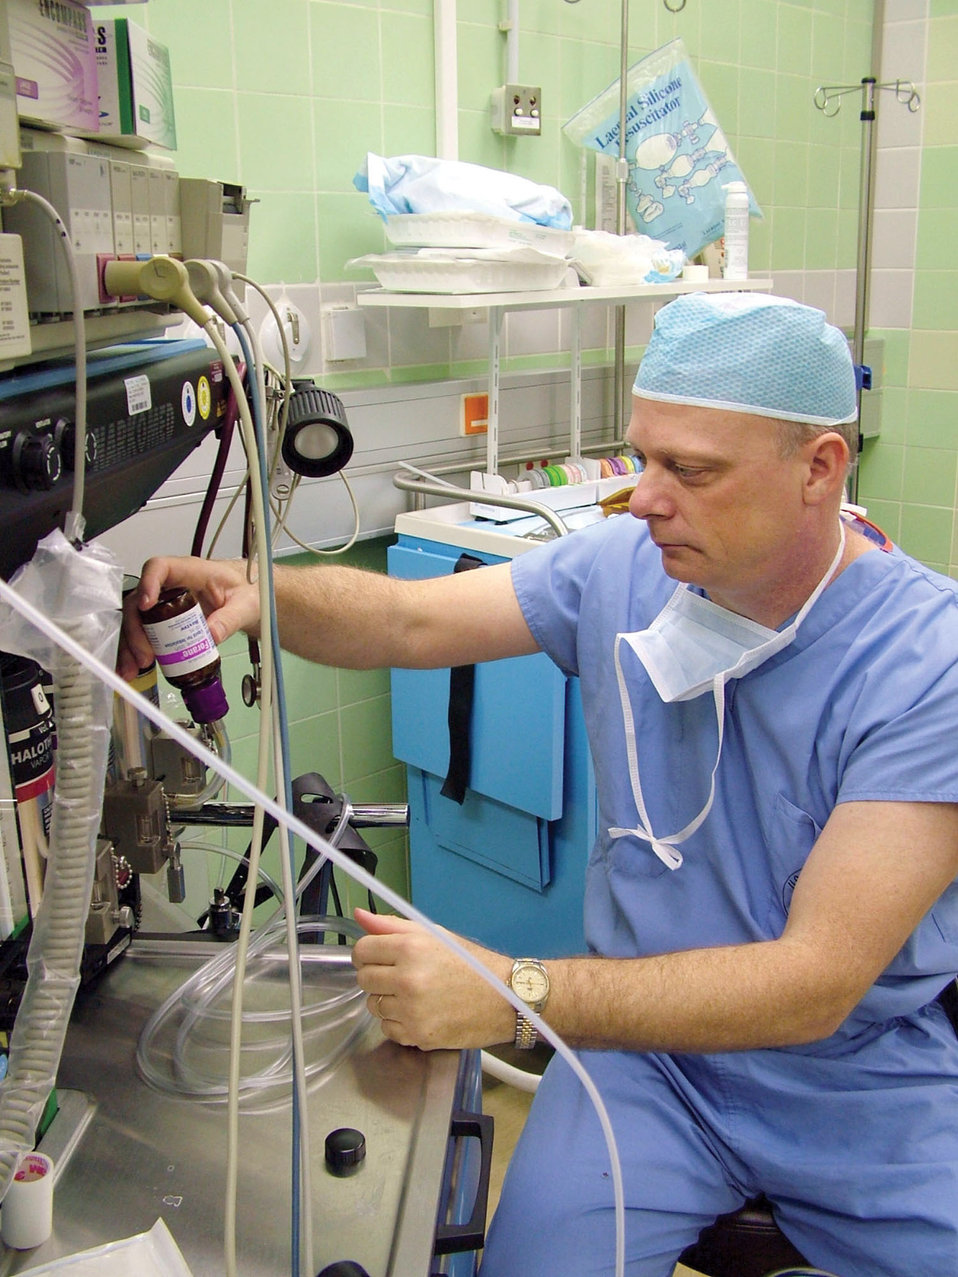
National Nurse Anesthetist Week kicks off Jan. 23

SPANGDAHLEM AIR BASE, Germany -- Lt. Col. Mike Bagwell refills a machine with anesthesia gas that is used to keep the patient asleep for surgery. He is the 52nd Medical Support Squadron surgical services flight commander.